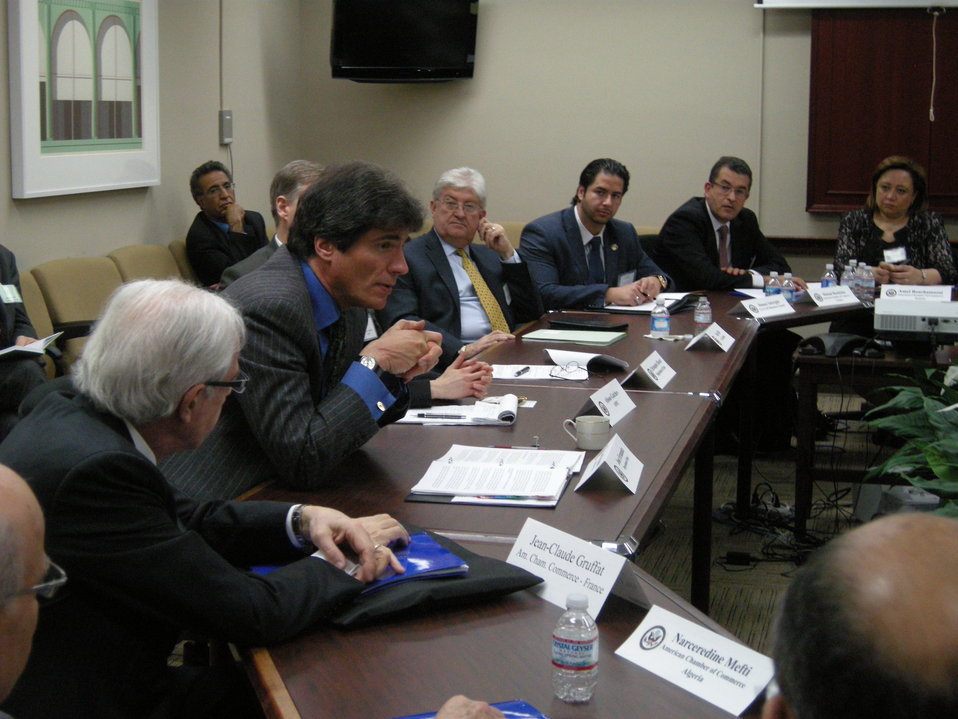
Assistant Secretary Fernandez Delivers Closing Remarks

Assistant Secretary of State for Economic and Business Affairs Jose Fernandez delivers closing remarks at a breakout session hosted by the Bureau of South and Central Asian Affairs during the Global Business Conference at the U.S. Department of State in Washington, D.C., on February 22, 2012.